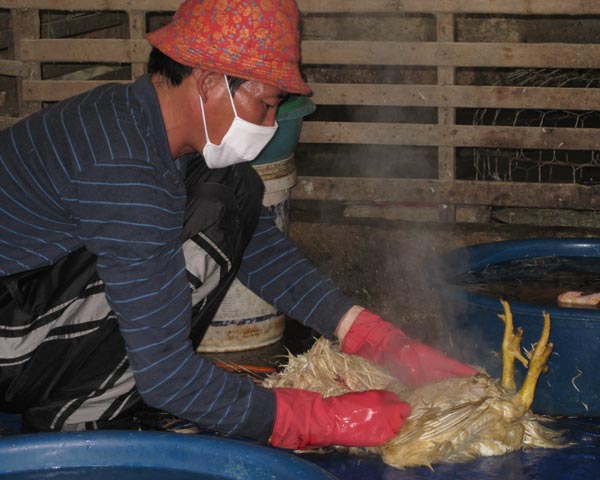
USAID helps poultry farmers and veterinarians combat avian and pandemic influenza.

USAID supports poultry workers like Nguyen Minh Duc from Phy Ly, Vietnam, as they combat bird flu outreaks.